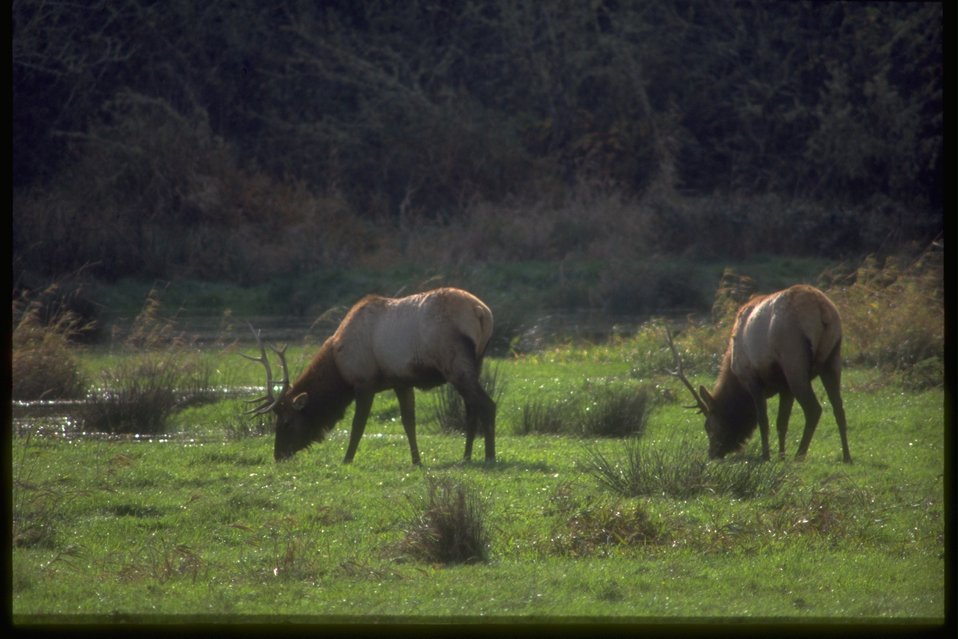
Roosevelt Elk.